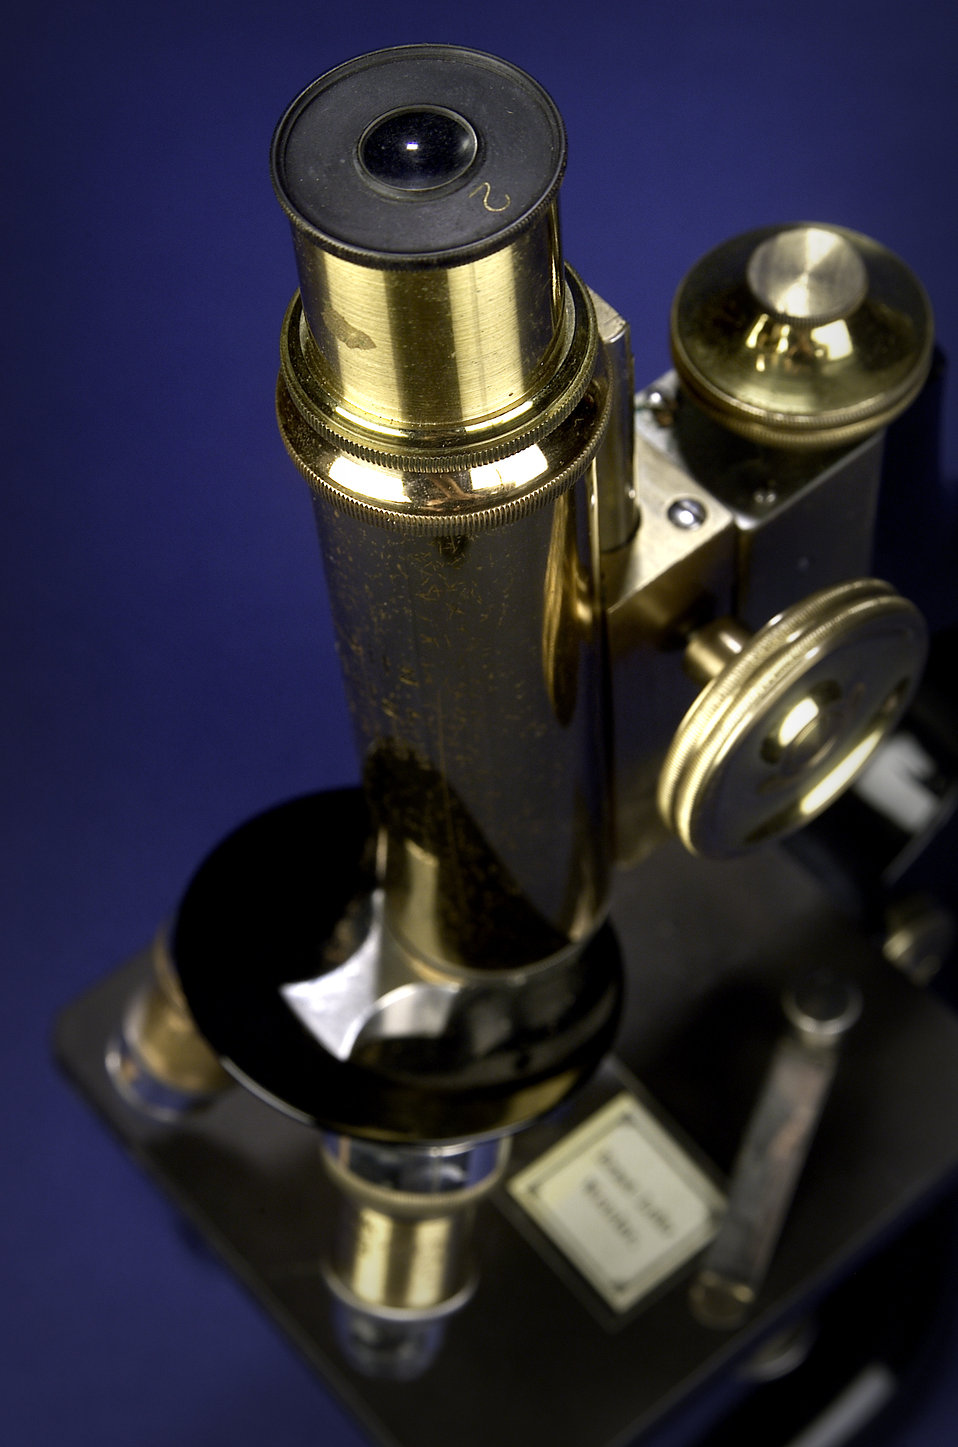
This is the 1913 E. Leitz-Wetzlar microscope that Dr. Mountin used in medical school and early in his career as a physician.